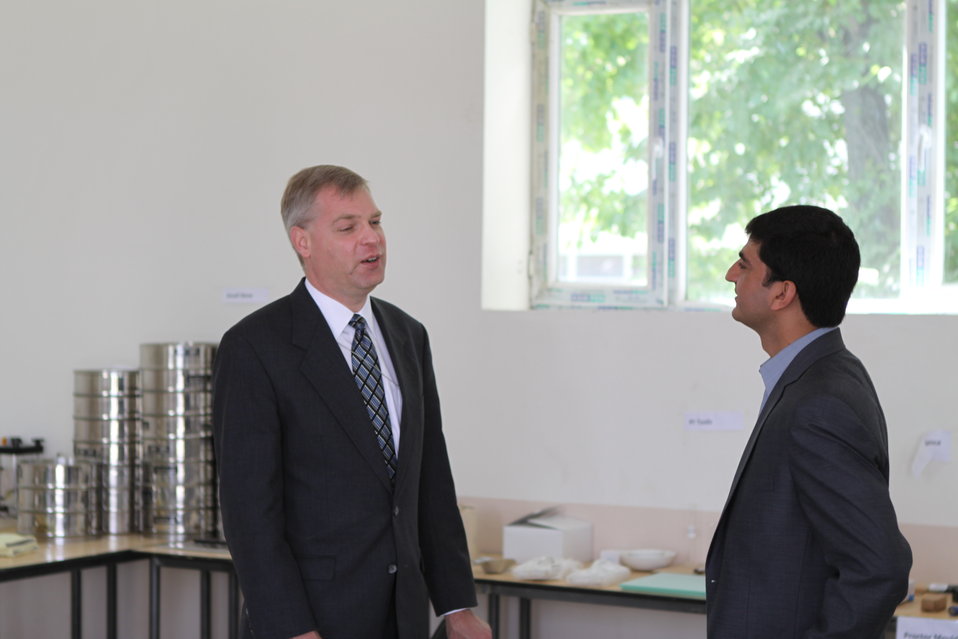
100522 ATVI Graduation 009